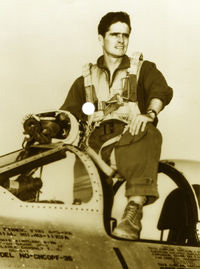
51st Fighter Wing Aces

Maj. William T. Whisner became the first ace of the wing Feb. 23, 1952. He was the Commander, 25th Fighter-Interceptor Squadron. Major Whisner also was an ace in World War II.